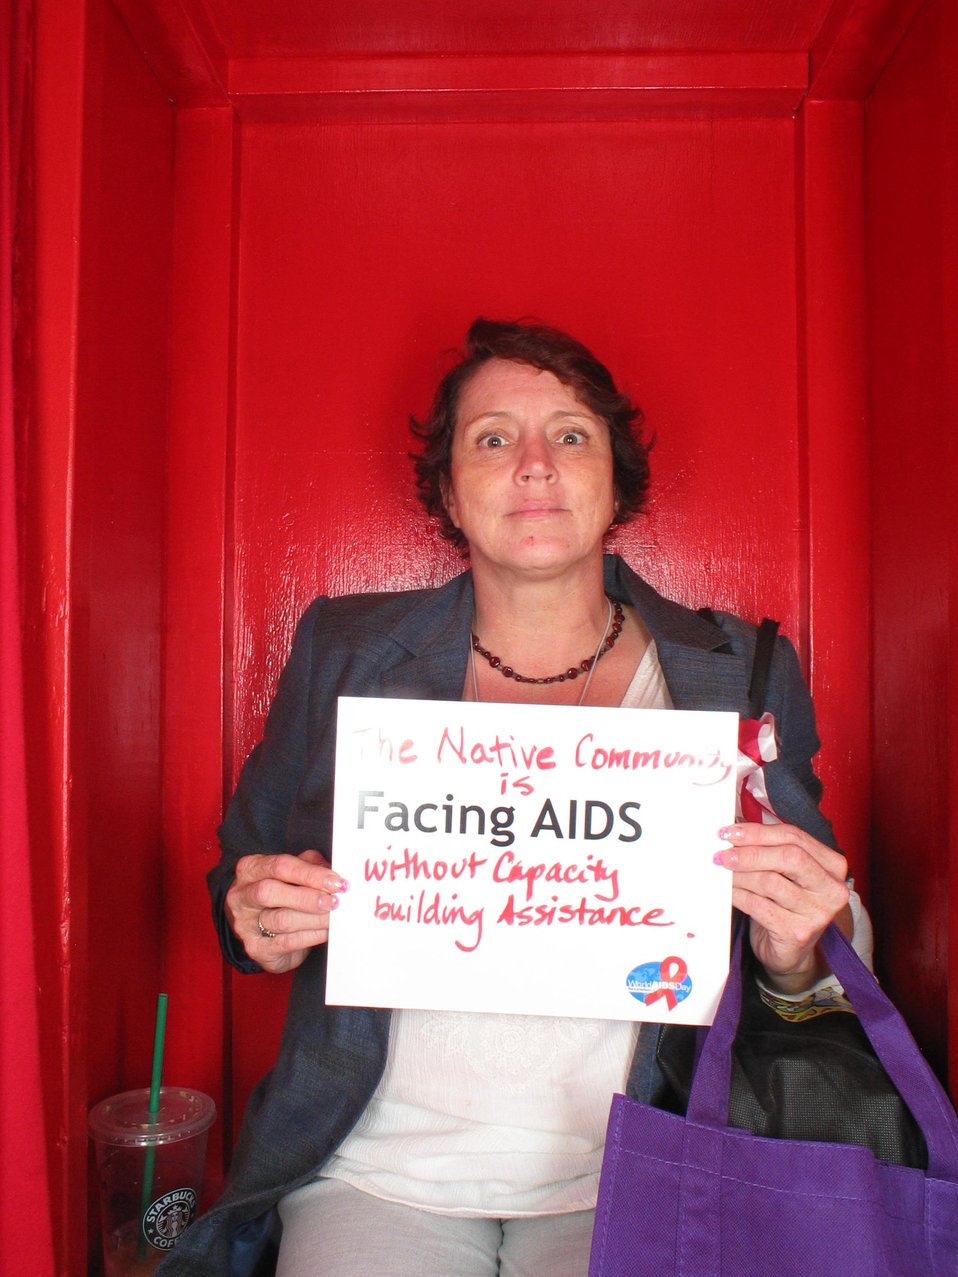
The native community is Facing AIDS without capacity building assistance.